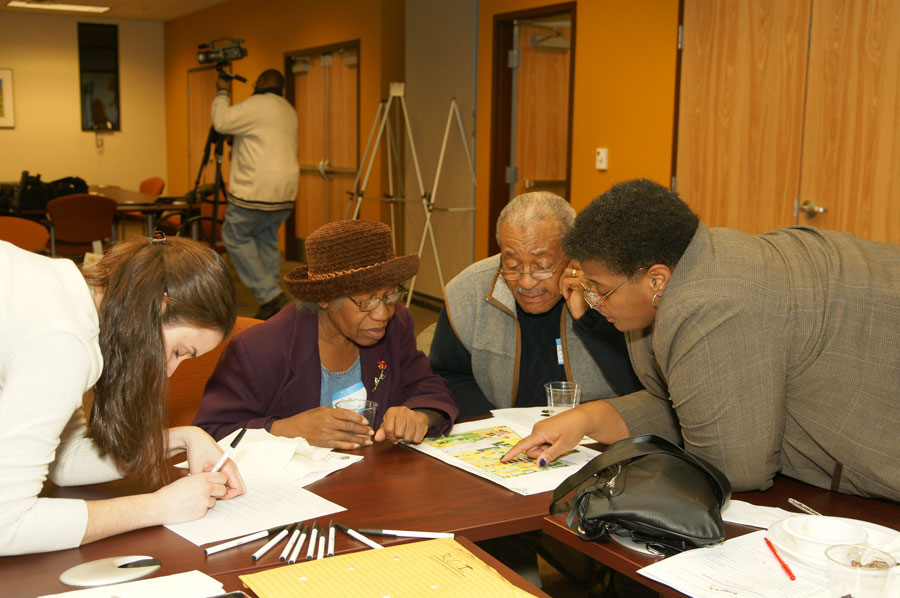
Detroit LEAP-Web-EditedDSC06667

Detroit’s Lower Eastside Action Plan (LEAP) and planning process engaged residents in making decisions on their neighborhood’s future, stabilizing the thriving areas still left, and transforming vacant properties to improve quality of life. Here, residents comment on a design. LEAP is the Honorable Mention for EPA’s 2013 National Award for Smart Growth Achievement in the category of Policies, Programs, and Plans. The award is given annually for creative, sustainable initiatives that better protect the health and the environment of our communities while strengthening local economies. In 2013, EPA recognized innovative projects in seven communities.